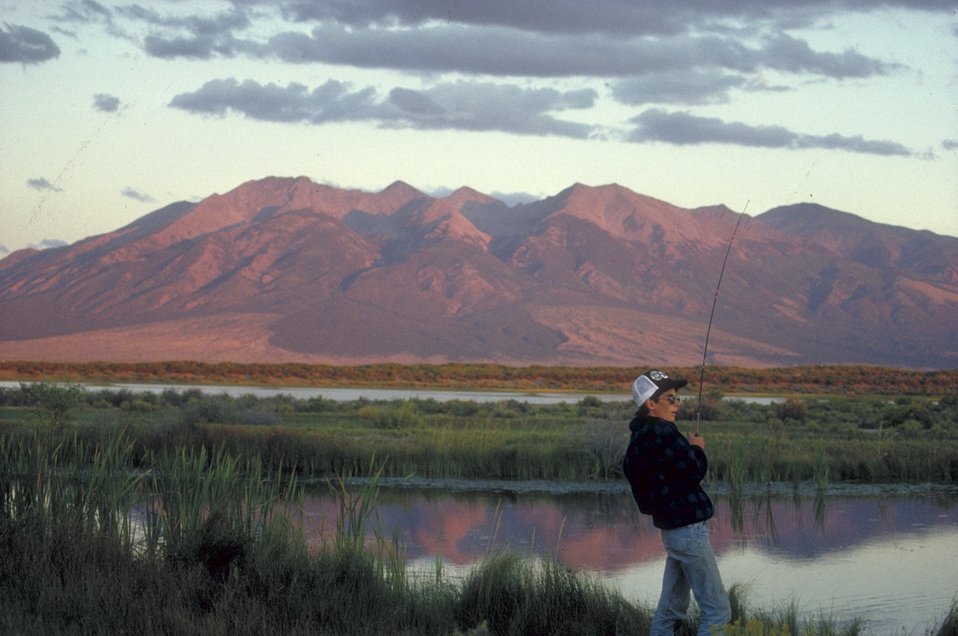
Sunrise fishing at Blanca Wetlands.